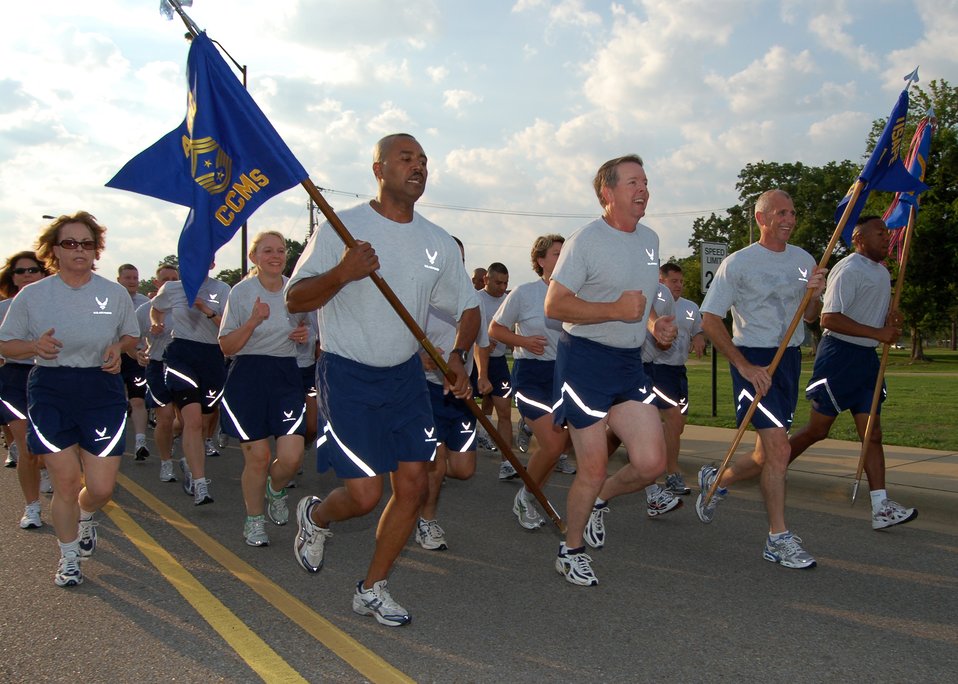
Enlisted leaders hit the road to set example

Chief Master Sgt. of the Air Force Rodney J. McKinley runs with other senior enlisted leaders in a formation run July 22 that officially kicked off the Senior Enlisted Leader Summit at Maxwell Air Force Base's Gunter Annex, Ala.